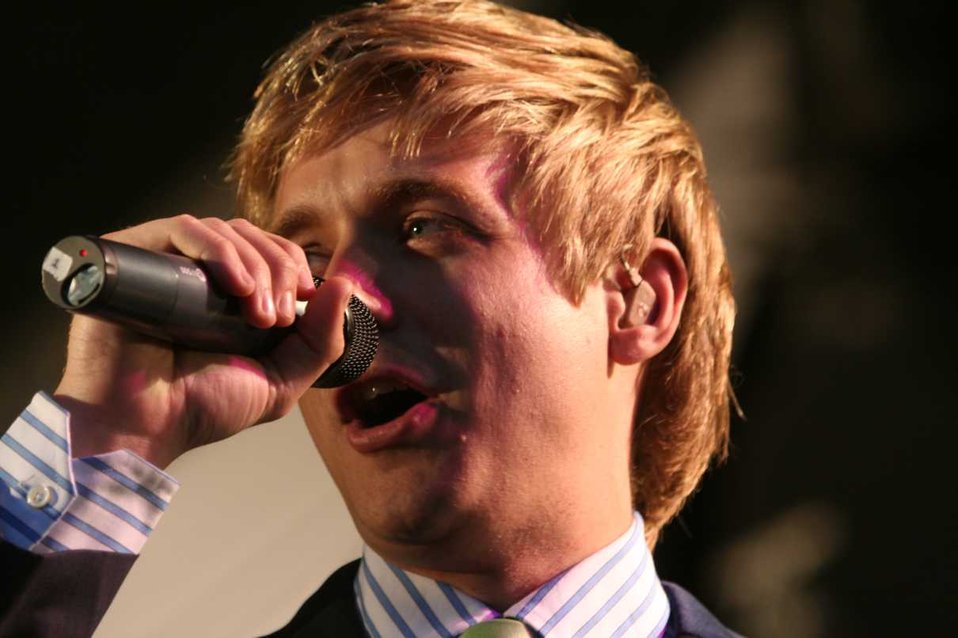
G4 Image Last Ever Concert Image: Peter French, Flying Tigers Studio www.flyingtigers.co.uk